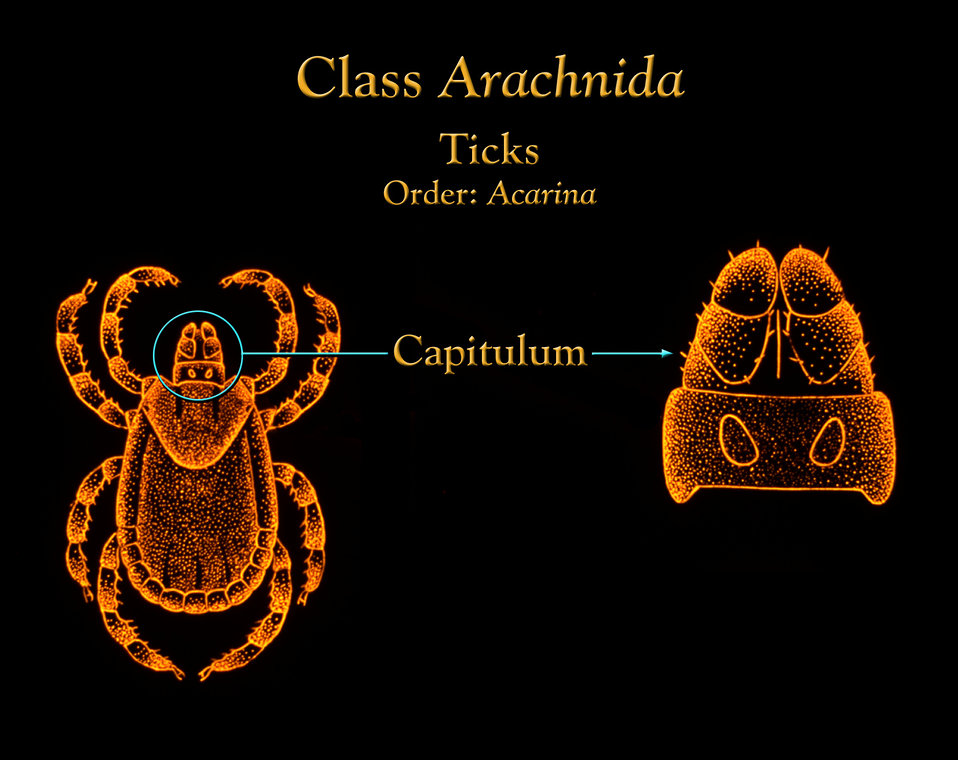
At its anterior end, ticks possess what is termed a 'capitulum', or 'little head', made up of the arachnid's mouthparts.